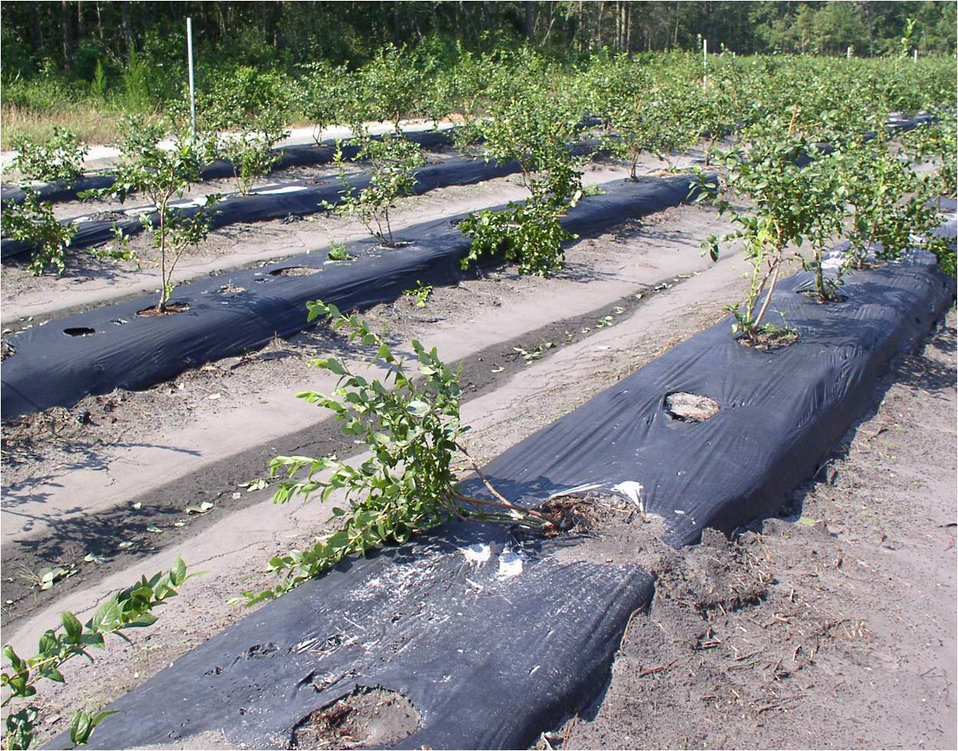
Blueberry Crop damage caused by Hurricane Irene in North Carolina, on Monday, August 29, 2011.